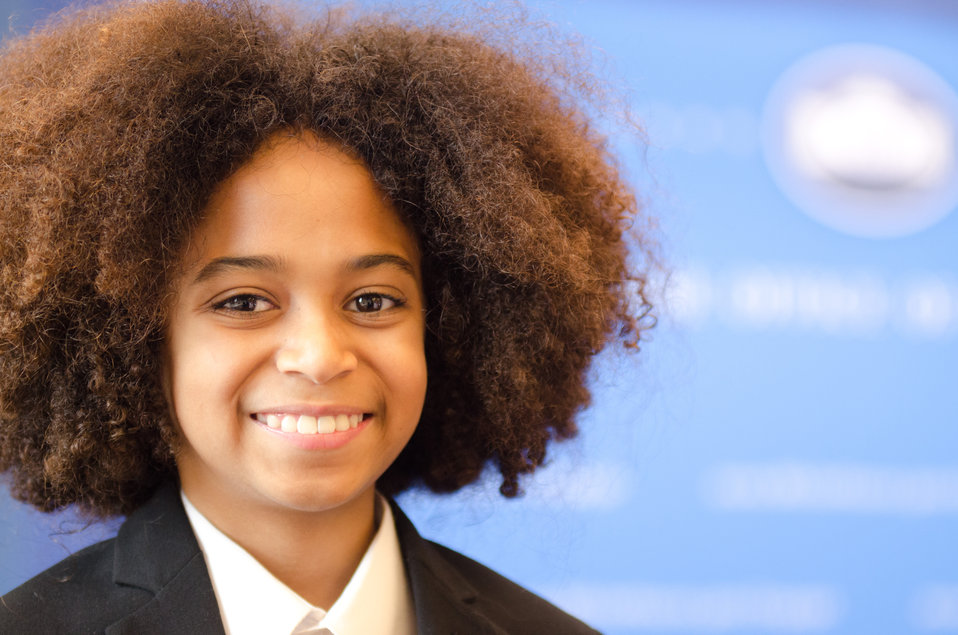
Joshua’s Heart Foundation President Joshua Williams is one of eleven honorees recognized for their efforts to reduce hunger and increase food security in the U.S. and internationally at the White House Champions of Change Strengthening Food Security at Home and Abroad Event held at the White House on Thursday, September 6, 2012.